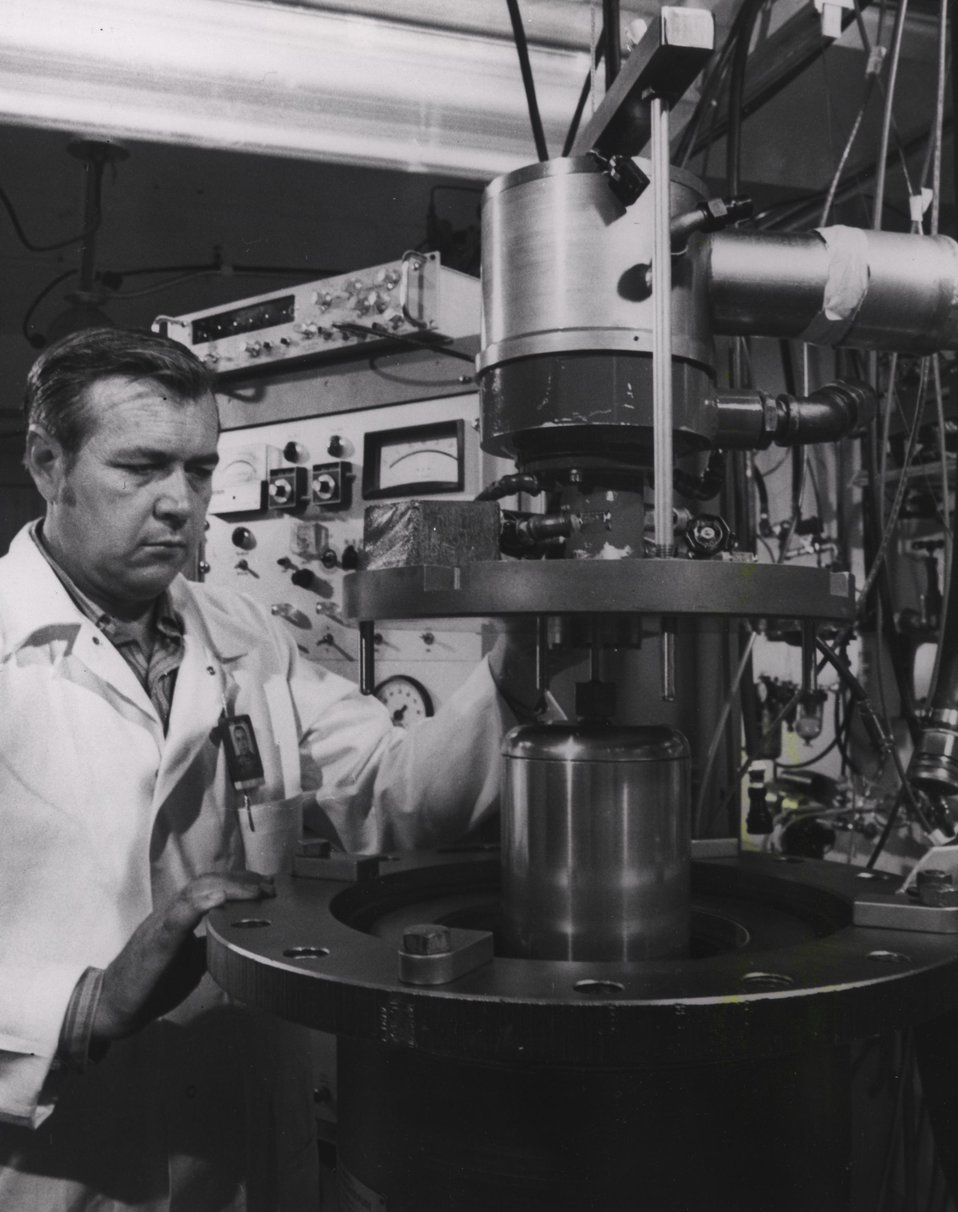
LIQUID ZONAL CENTRIFUGES...High speed, liquid zonal centrifuges developed at the U.S. Atomic Energy Commission's Oak Ridge (Tennessee) National Laboratory are now being manufactured commercially for ultra-high purity biological separations. c. 1972